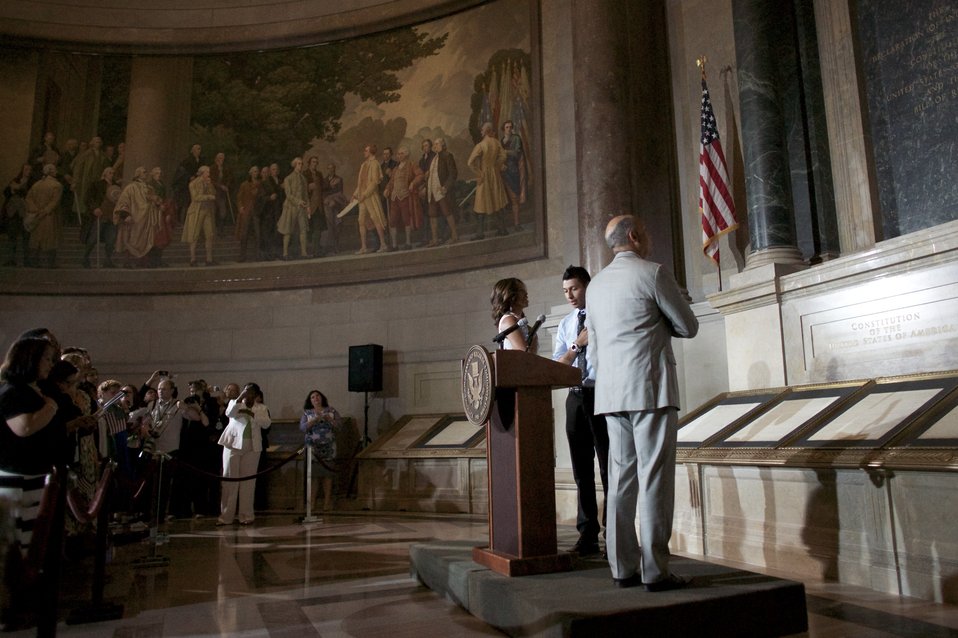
Naturalization Ceremony with Michelle Obama